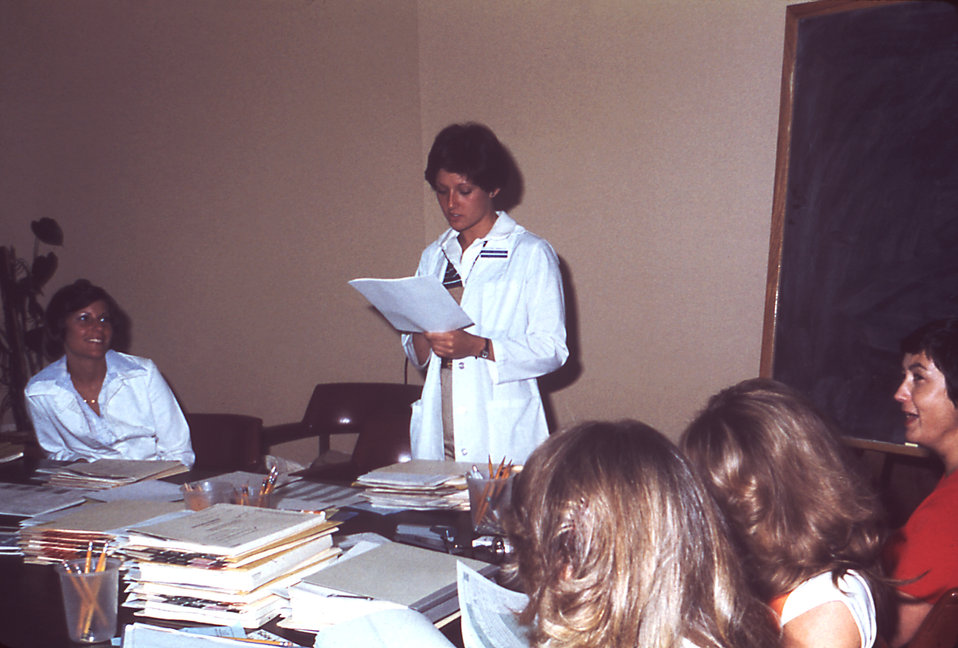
A CDC staff member is collecting data at Doctor's Hospital, Tucker, Georgia, 1977.